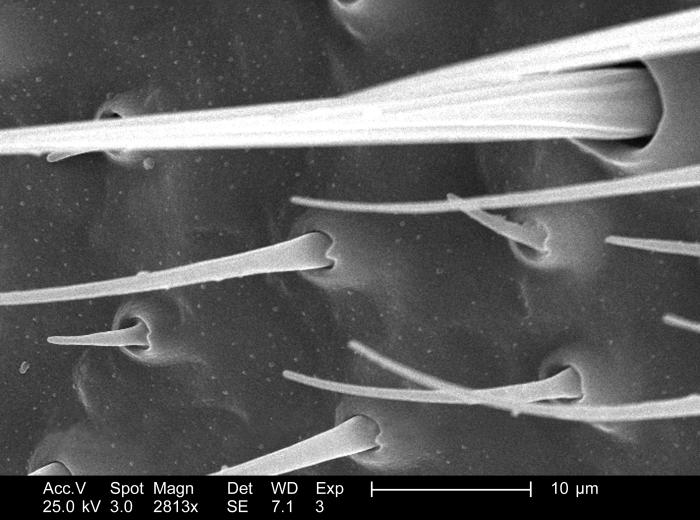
This high-powered scanning electron micrograph (SEM), magnified 2813x, revealed the ultrastructural details displayed along the exterior of the segmented length of an unidentified dragonfly's antenna. This insect was found deceased on the grounds of the Decatur, Georgia suburbs, and after its demise, retained a morphologically pristine state.